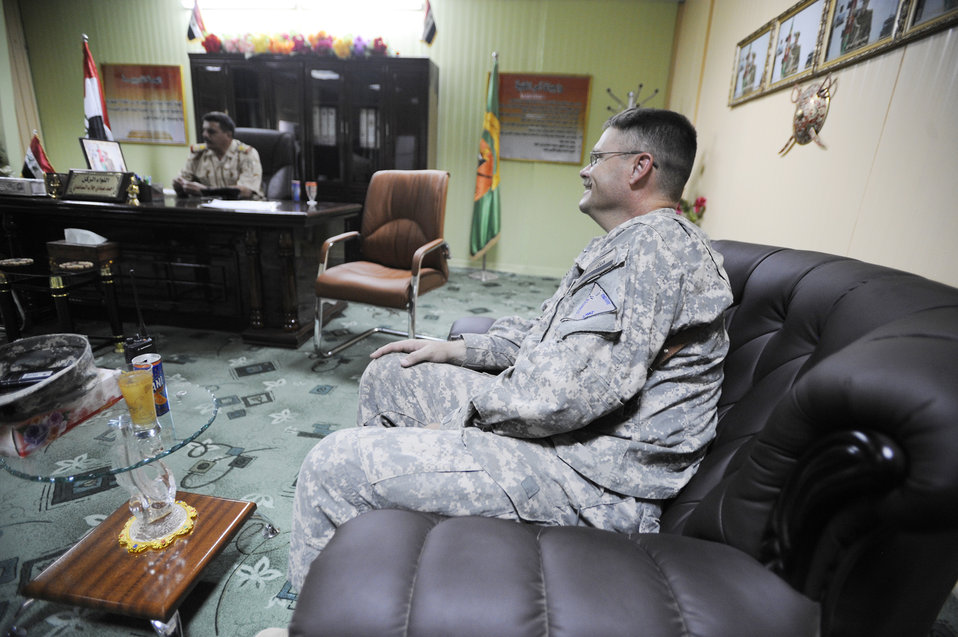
Airmen help Iraqi army take control of base operations

Lt. Col. Steven Ramsay speaks with the commander of the Iraqi officer training school located on Camp Ur, an Iraqi military base Aug. 17, 2009. Colonel Ramsay, deployed from Keesler Air Force Base, Miss., and his team advise the Iraqi military in base operations. Colonel Ramsay is the Logistics Military Advisory Team senior adviser.